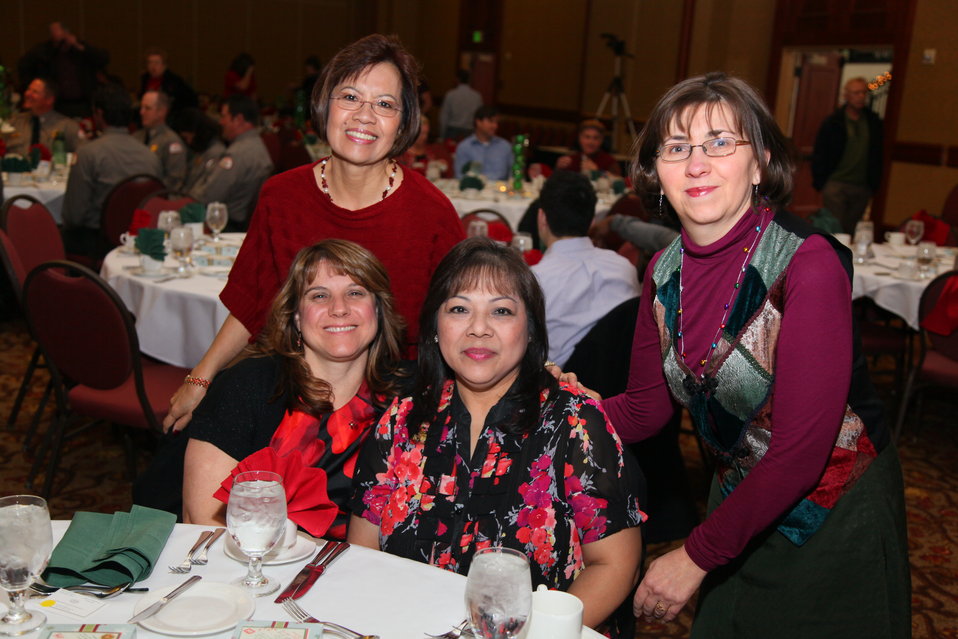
Sacramento District Holiday Party 2011